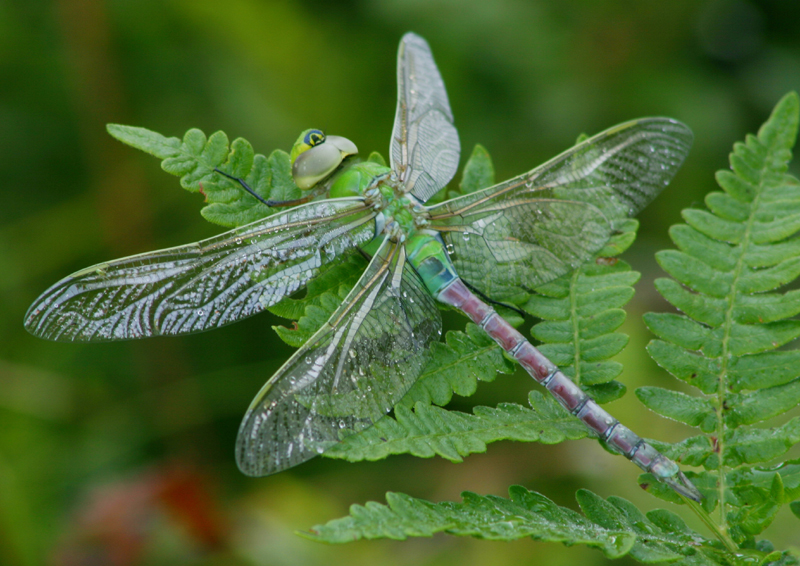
Common green darner

Green darner dragonfly at Seney National Wildlife Refuge.
Photo credit: Dawn Kopp, 2011photo contest, 2nd place